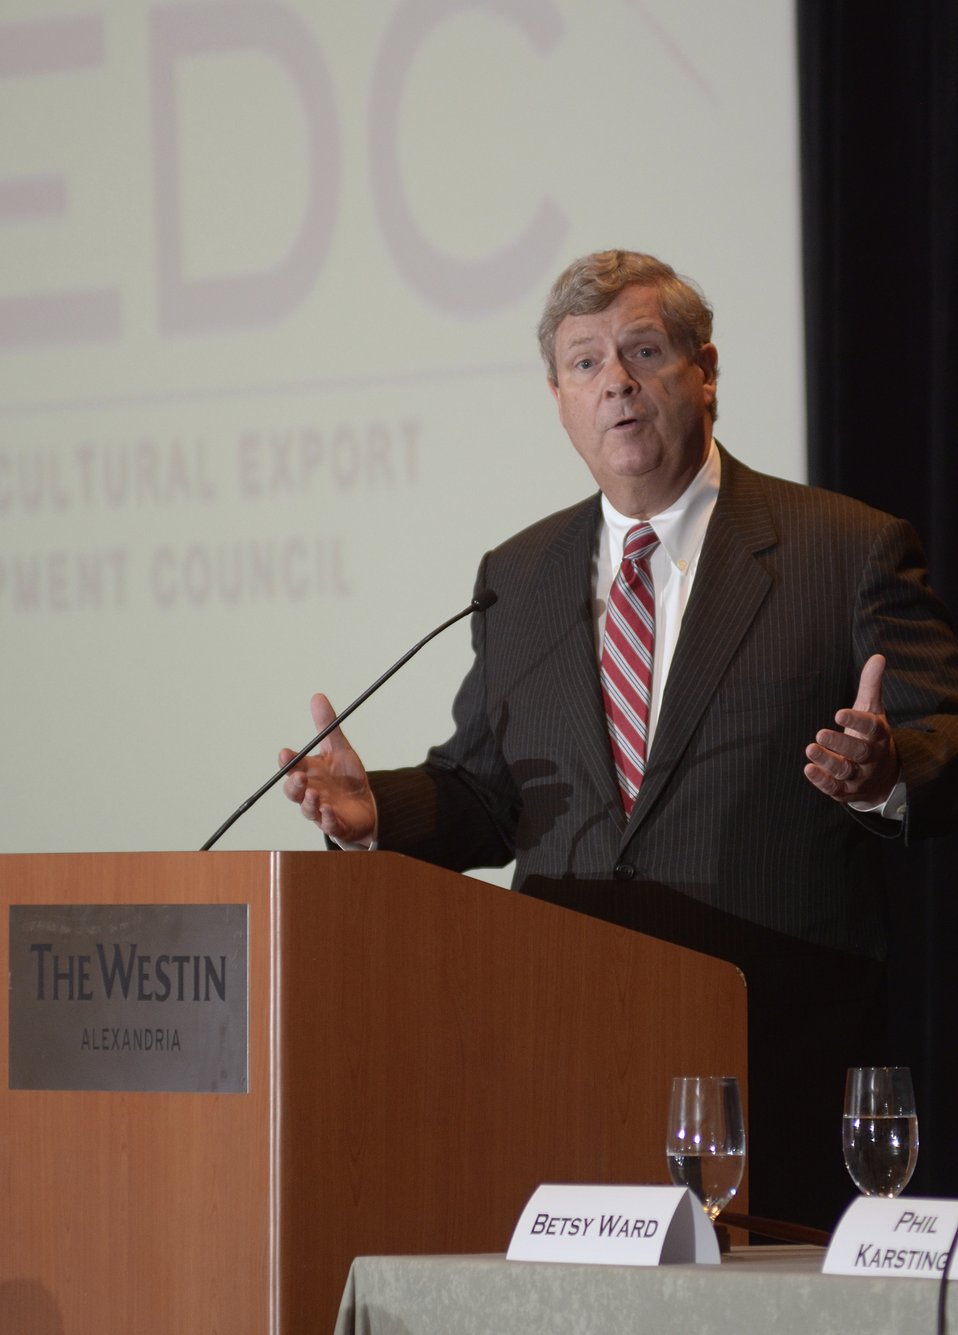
Agriculture Secretary Tom Vilsack presents keynote remarks at the U.S. Agricultural Export Development Council (USAEDC) Attaché Seminar, at the Westin Alexandria, in Alexandria, VA, on Wednesday, July 10, 2013. USAEDC is a non-profit private sector trade association that provides an exchange and coordination of information to promote the export of the products of U.S. agriculture. Their membership includes U.S. commodity trade associations, farmer cooperatives and state regional trade groups from around the country. In the interest of U.S. agricultural growers and producers their export promotion efforts, work in conjunction with the U.S. Department of Agriculture Foreign Agricultural Service.